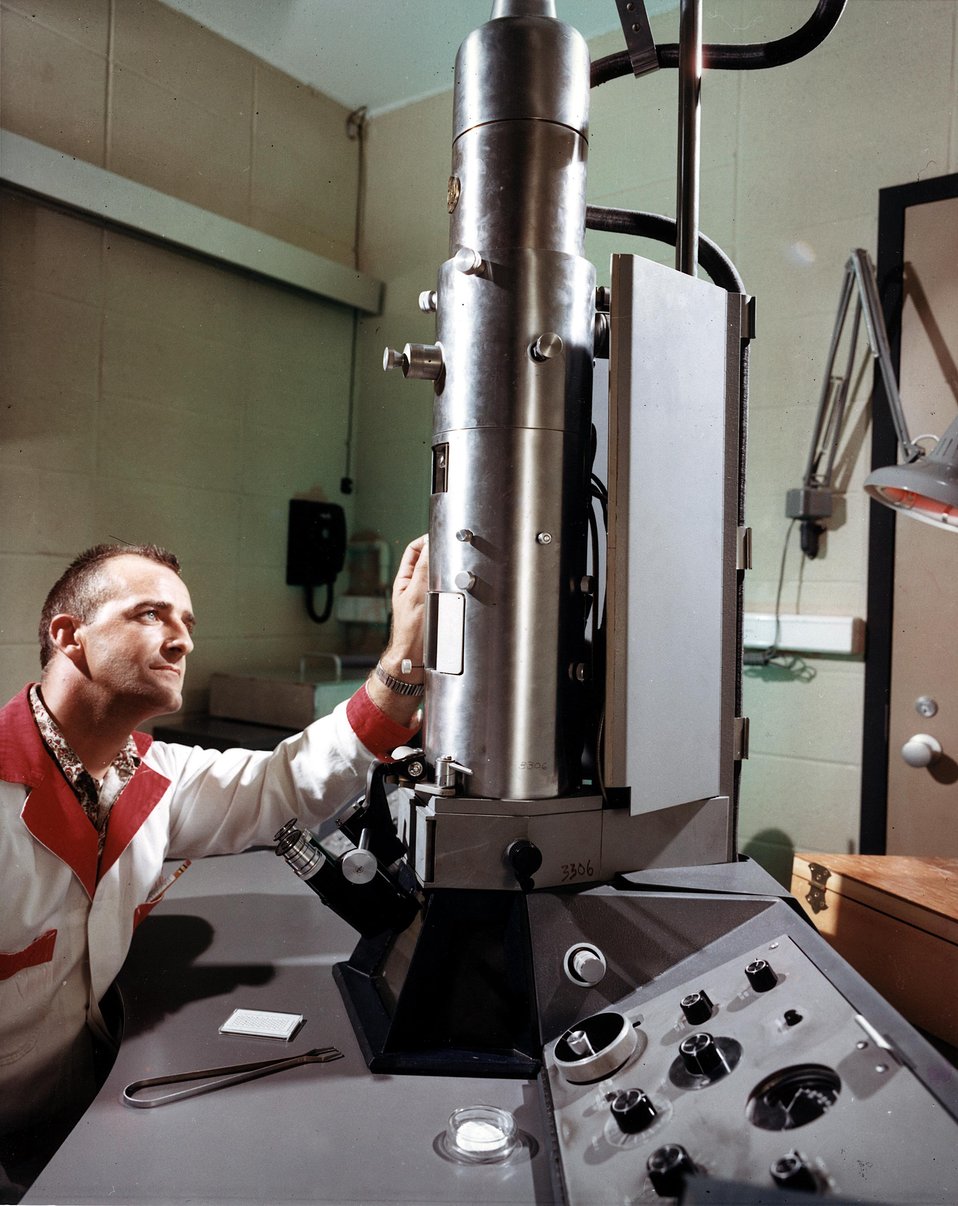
Electron Microscope: With this instrument, using transmitted electrons, structures can be seen which are about one-five hundredth the size of the smallest objects just visible in the light microscope. c. 1966